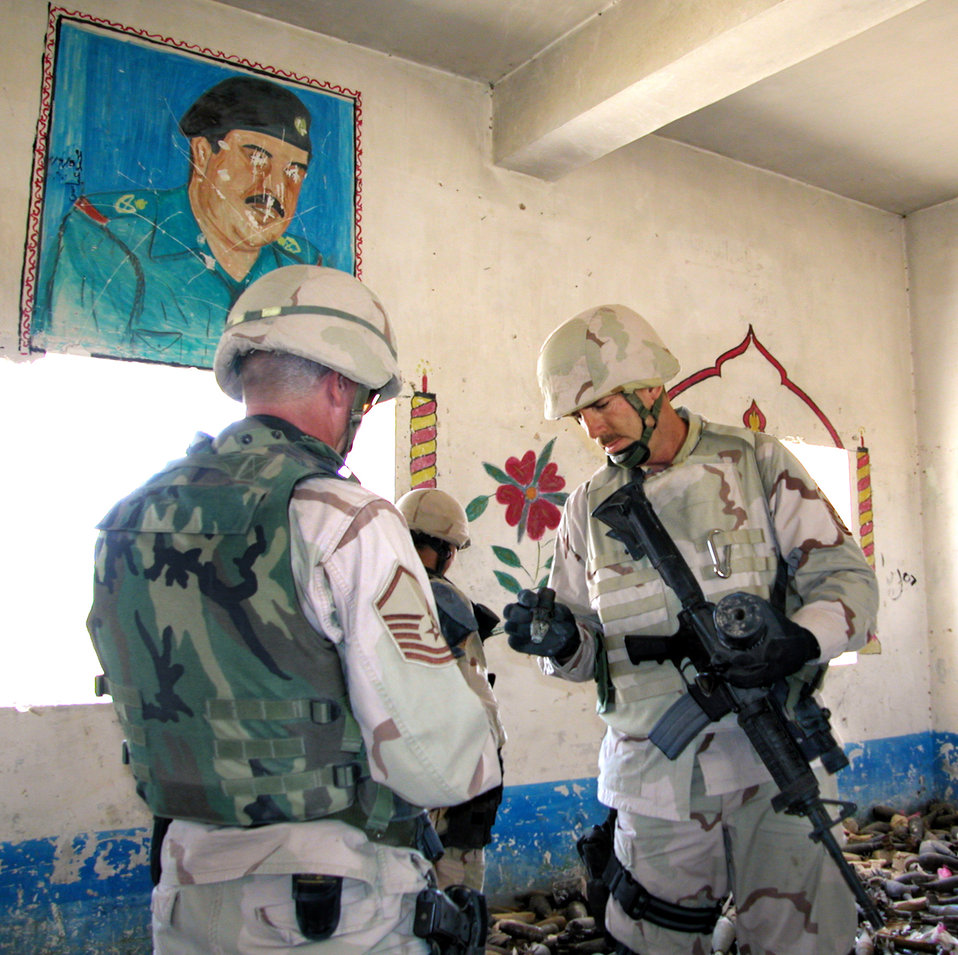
Airmen clean up Iraqi stockpile

KIRKUK, Iraq -- Master Sgts. Dale Griffin (right) and Jerry Dunn examine Iraqi munitions during a search of a former Republican Guard facility here. The search uncovered both inert and live ordnance, all of which was subsequently removed and destroyed. Griffin and Dunn are explosive ordnance technicians deployed to nearby Kirkuk Air Base.